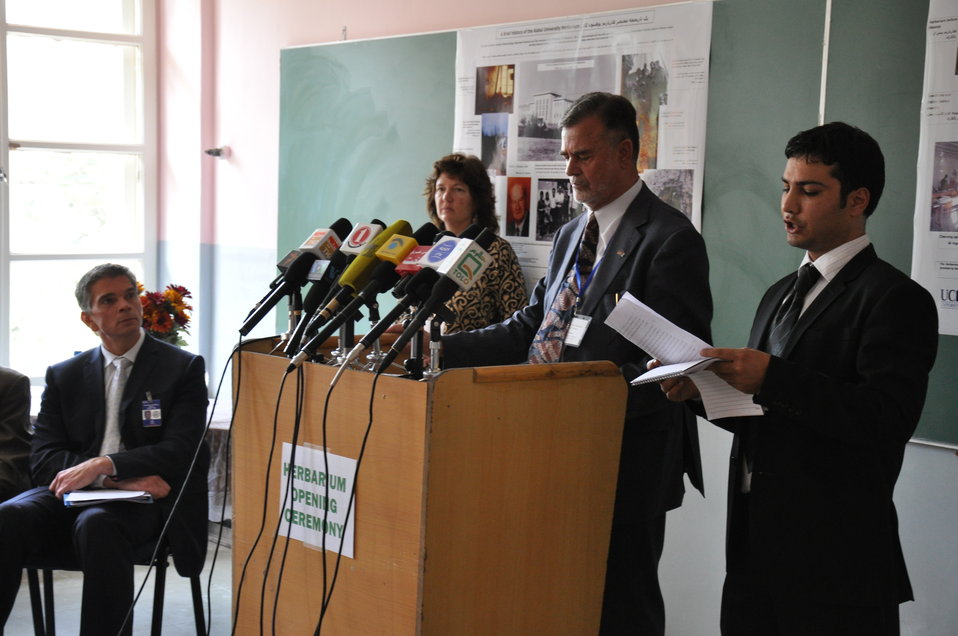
Kabul University Herbarium